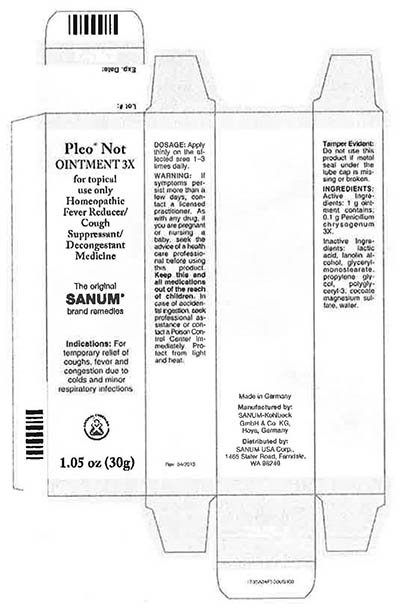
RECALLED – Homeopathic Drug Products

March 18, 2014 – Product Recall – Terra-Medica Issues Voluntary Nationwide Recall of Specified Lots of Pleo Homeopathic Drug Products Due to the Potential for Undeclared Penicillin.